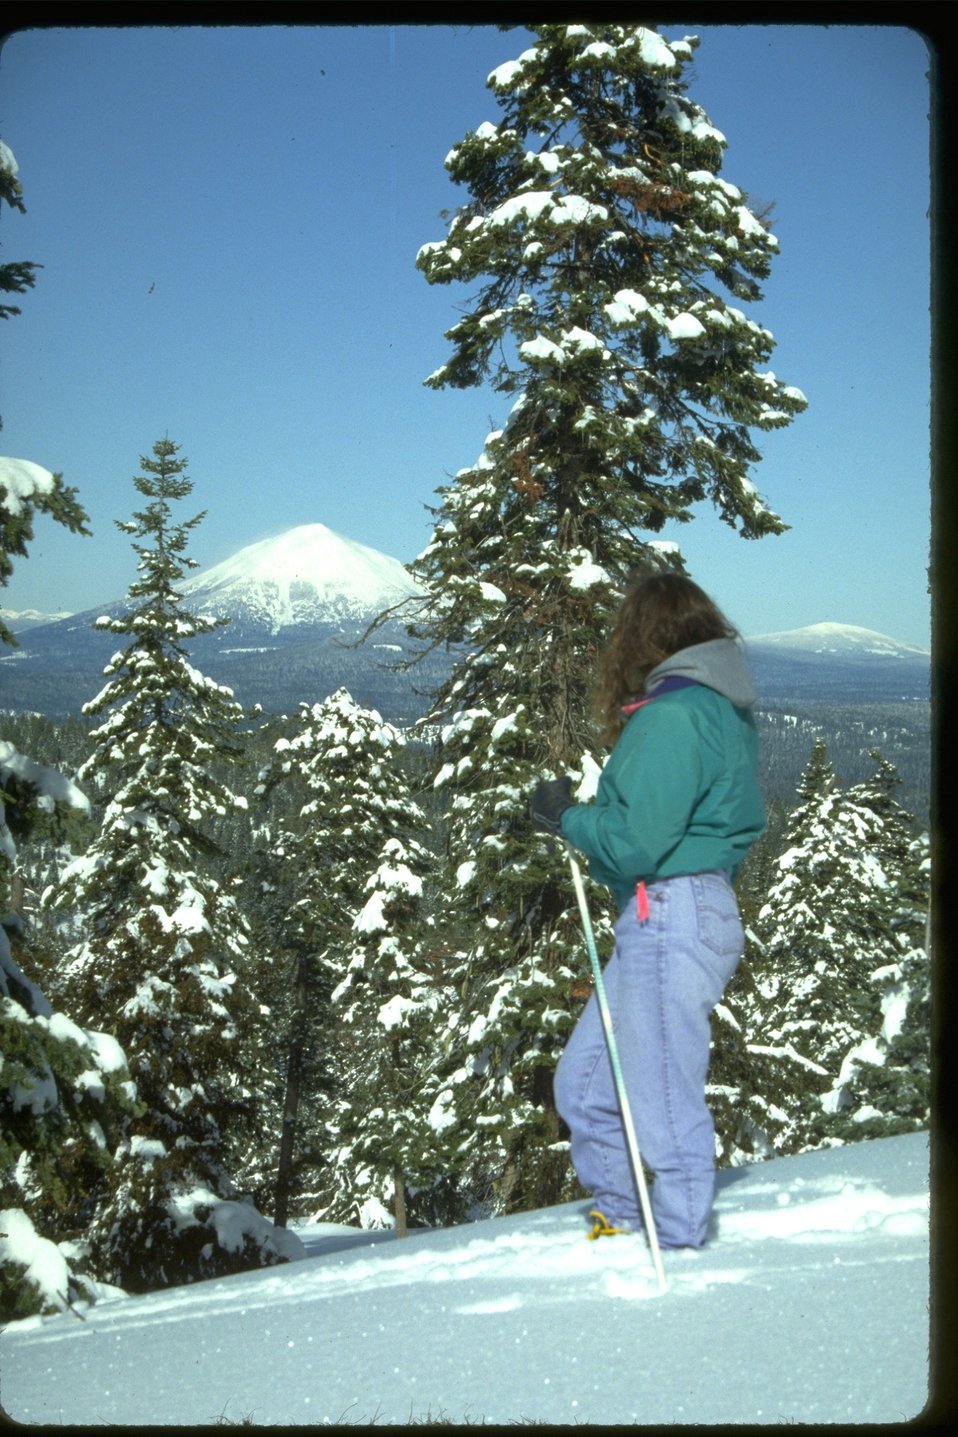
Cross-Country skiing at Buck Prairie.